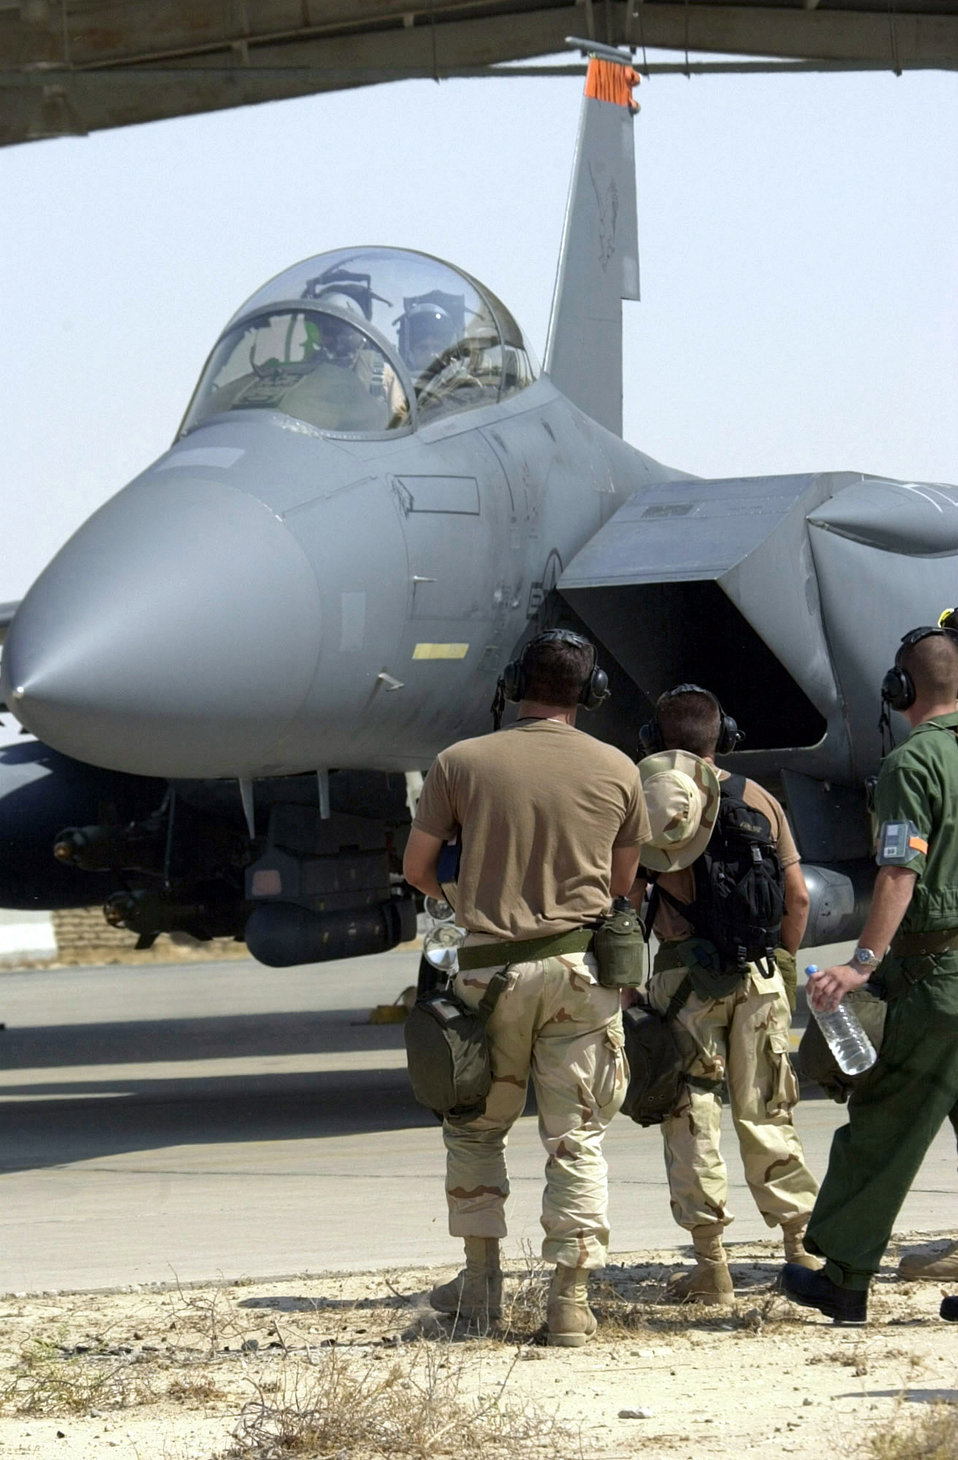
Eagle taxi

OPERATION ENDURING FREEDOM -– An F-15E Strike Eagle taxis out to fly its first bombing missions in support of Operation Enduring Freedom. The first production model of the F-15E was delivered to the 405th Tactical Training Wing at Luke Air Force Base, Ariz., in April 1988.